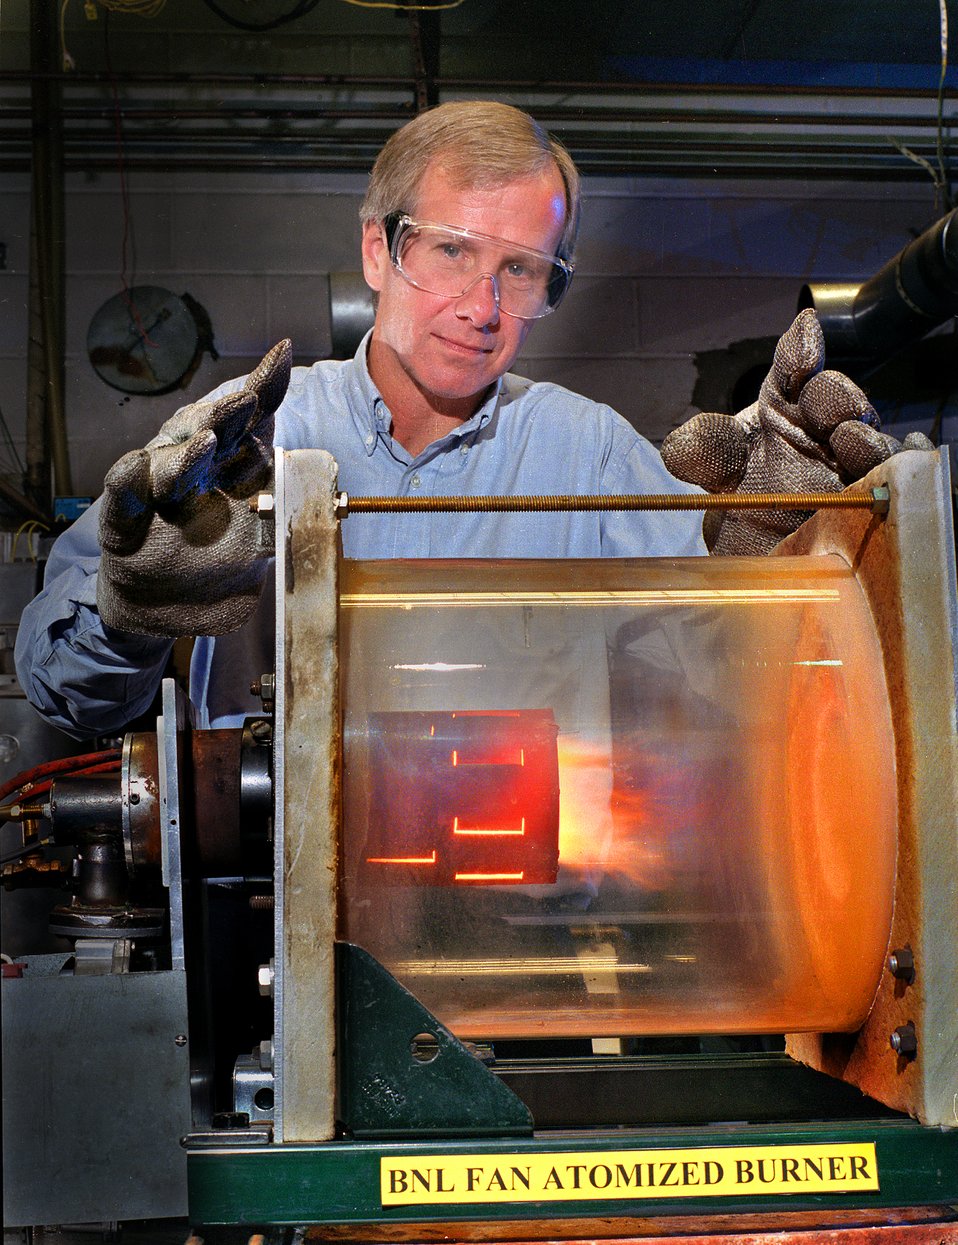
Brookhaven National Laboratory has developed a fan-atomized oil burner offers improved fuel-and air mixing for better performance.

The fan-atomized oil burner is powered by a mix of fuel oil and vegetable oil-derived alternative known as biodiesel. Initially designed as an alternative for diesel-powered vehicles, biodiesel is a biofuel that can also be used as an additive or replacement energy source for use in a standard, oil-fired furnace or boiler.